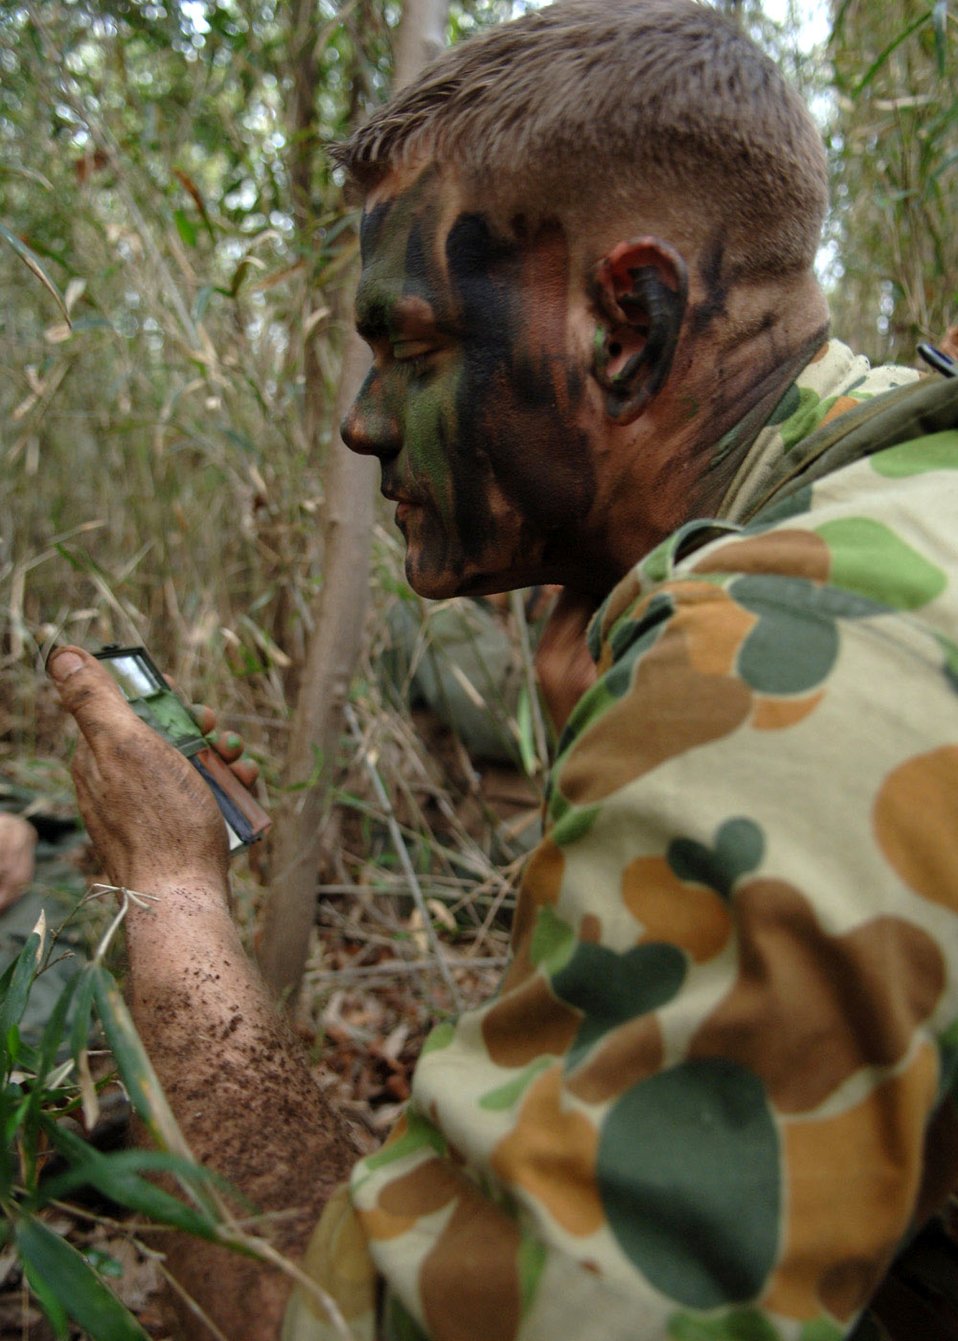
Training to survive

Senior Airman Jason Davis paints his face during training April 10 at the Tama Hills Recreation Center near Yokota Air Base, Japan. He is a survival, evasion, resistance and escape specialist from the 374th Operational Support Squadron and was recognized as the 2006 Pacific Air Forces SERE Airman of the Year. Airman Davis trains aircrew members from on techniques used for survival in if lost in hostile territory.